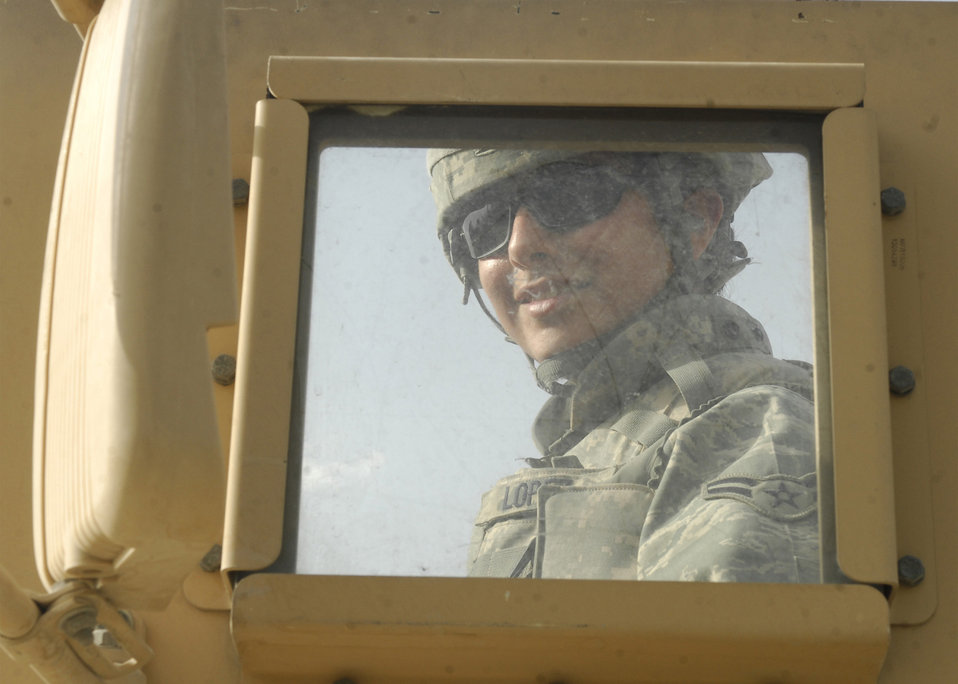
Lock and load

Airman 1st Class Diana Lopez smiles as she looks through a Humvee at Bagram Airfield, Afghanistan. She is assigned to the 455th Expeditionary Security Forces Squadron and deployed from Edwards Air Force Base, Calif.